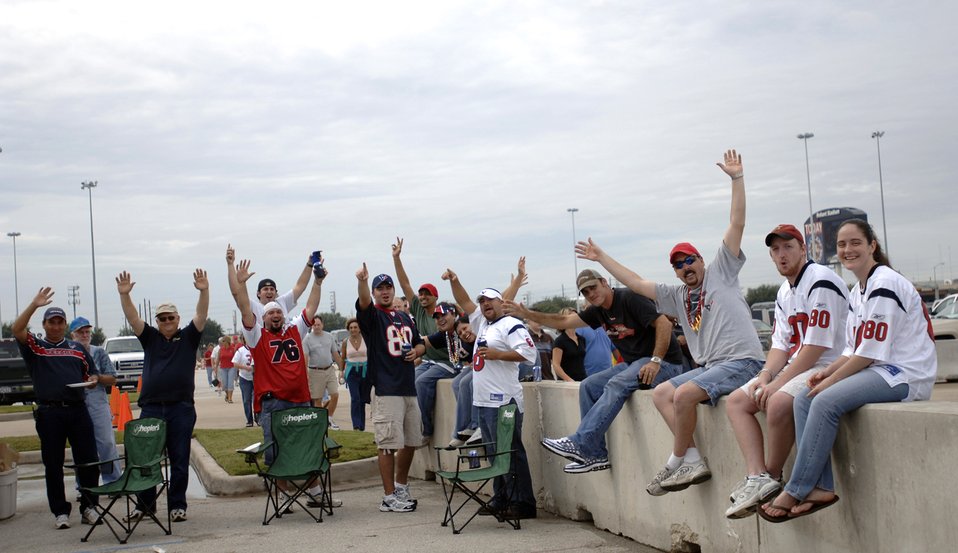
The Texans honored military servicemembers in their Salute to the Military day

Houston Texans fans yell out their support for military servicemembers during their tailgate party in the parking lot of Reliant Stadium in Houston Sept. 24. The game between the Houston Texans and Washington Redskins was designated as the Houston Texan's Salute to the Military day by team officials.